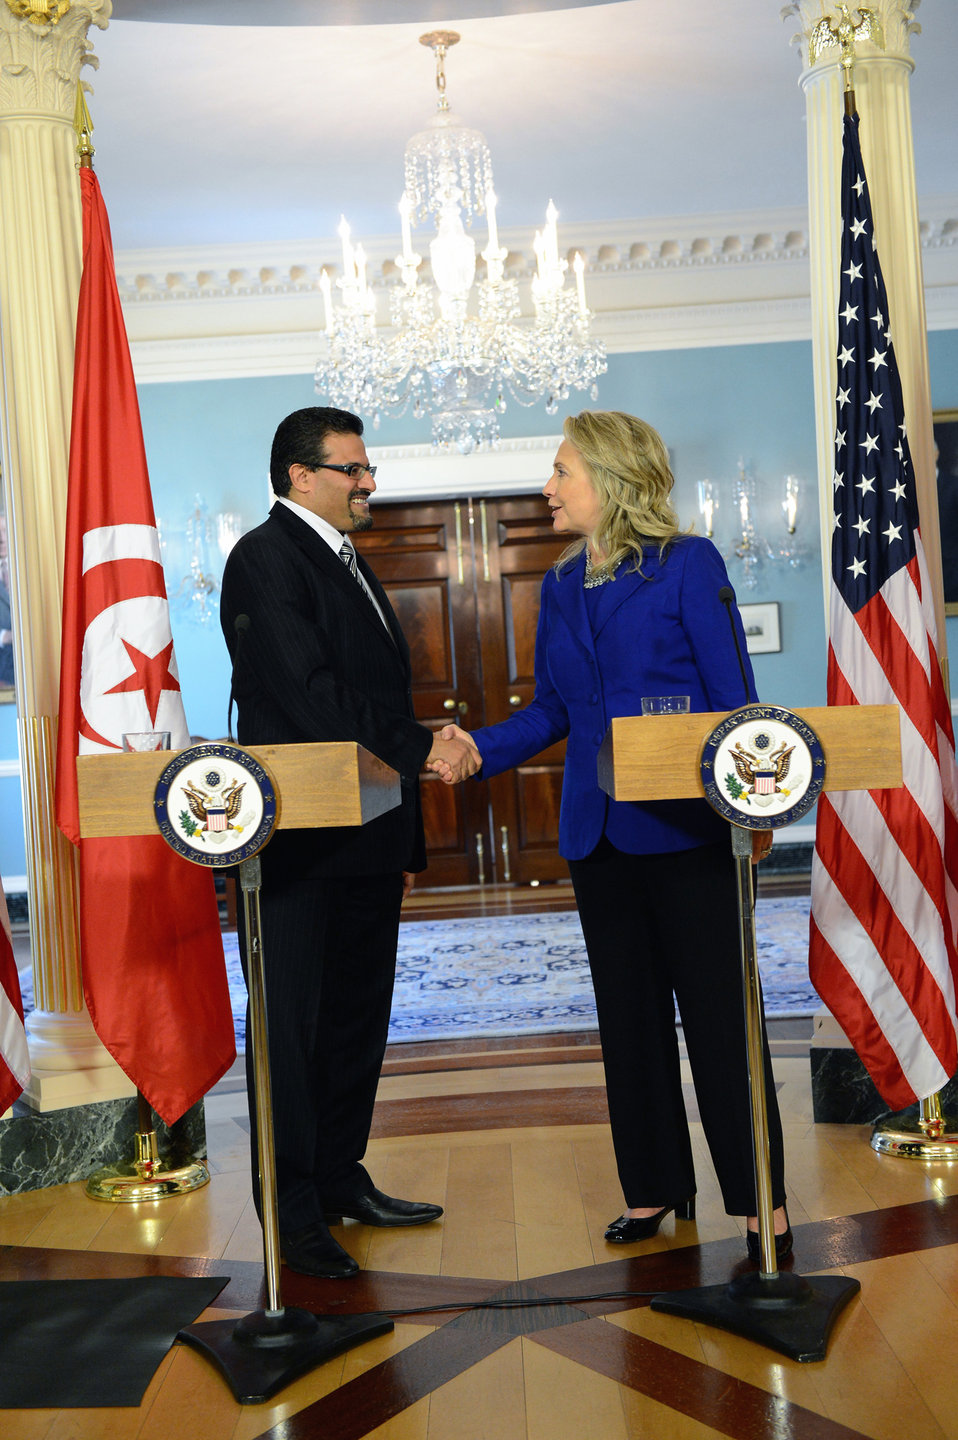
Secretary Clinton Meets With Tunisian Foreign Minister Abdessalem

U.S. Secretary of State Hillary Rodham Clinton meets with Tunisian Foreign Minister Rafik Abdessalem at the U.S. Department of State in Washington, D.C., September 21, 2012.